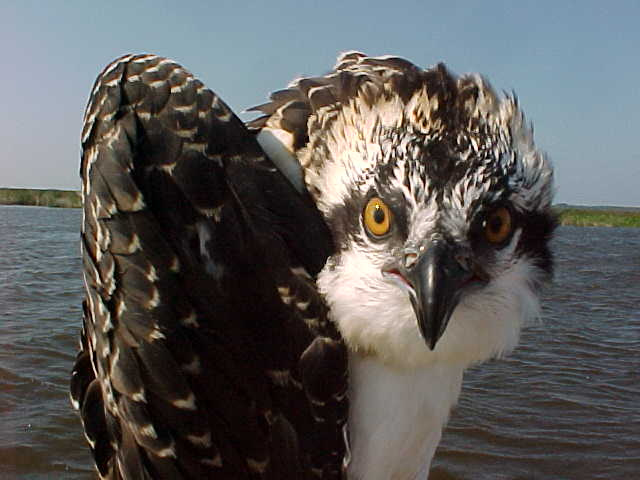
Osprey

Bay Bay National Wildlife Refuge, RI
(Photo: Katherine Whittemore, USFWS)

Conserving the Future - In July, 2011, thousands of Service employees, partners of the Service and wildlife enthusiasts gathered in Madison, WI for the 'Conserving the Future' conference that outlined a new, decade-long conservation plan for wildlife.